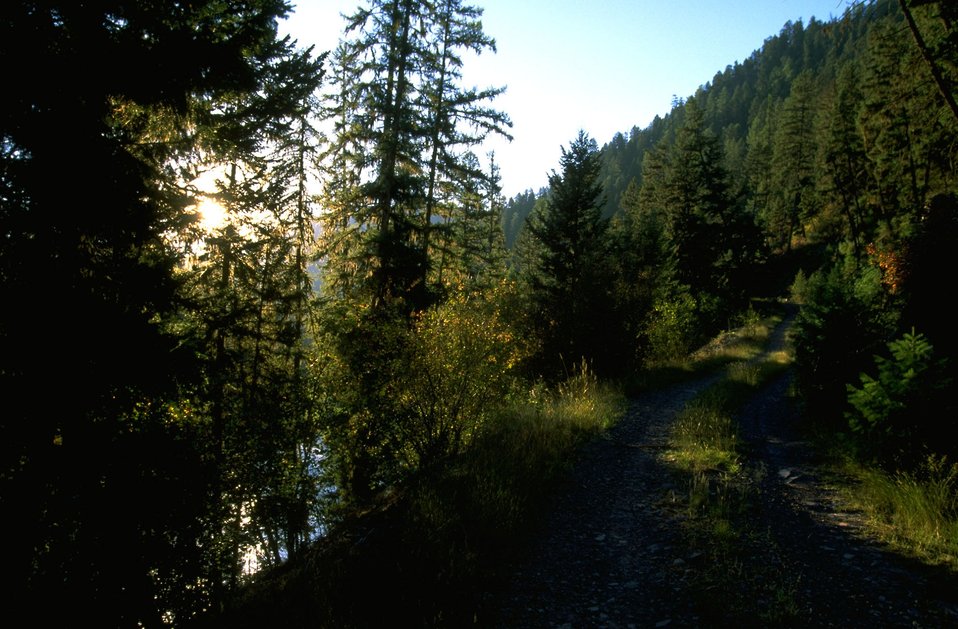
Road to the Buffalo non-motorized trail along the Blackfoot River